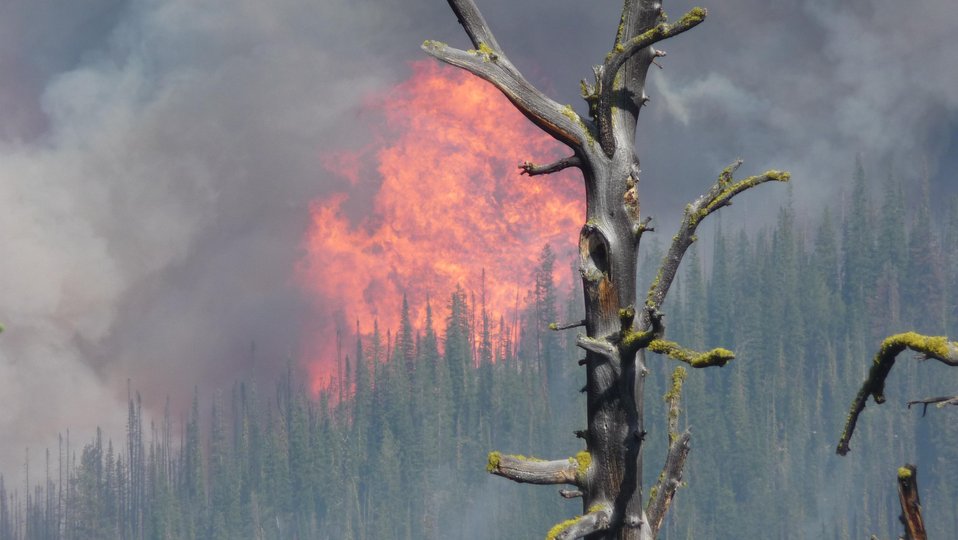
The Thunder City Fire in the Payette National Forest near Stibnite, ID began on Jul. 19, 2013 by lightning and has consumed approximately 1, 400 acres and is approximately 15% contained.